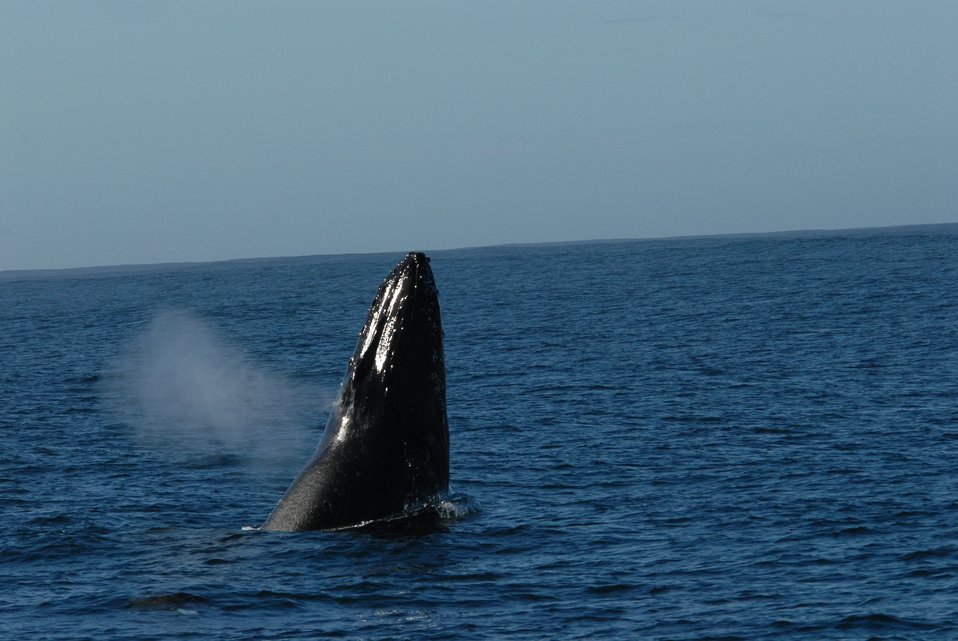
Humpback whale spu-hopping